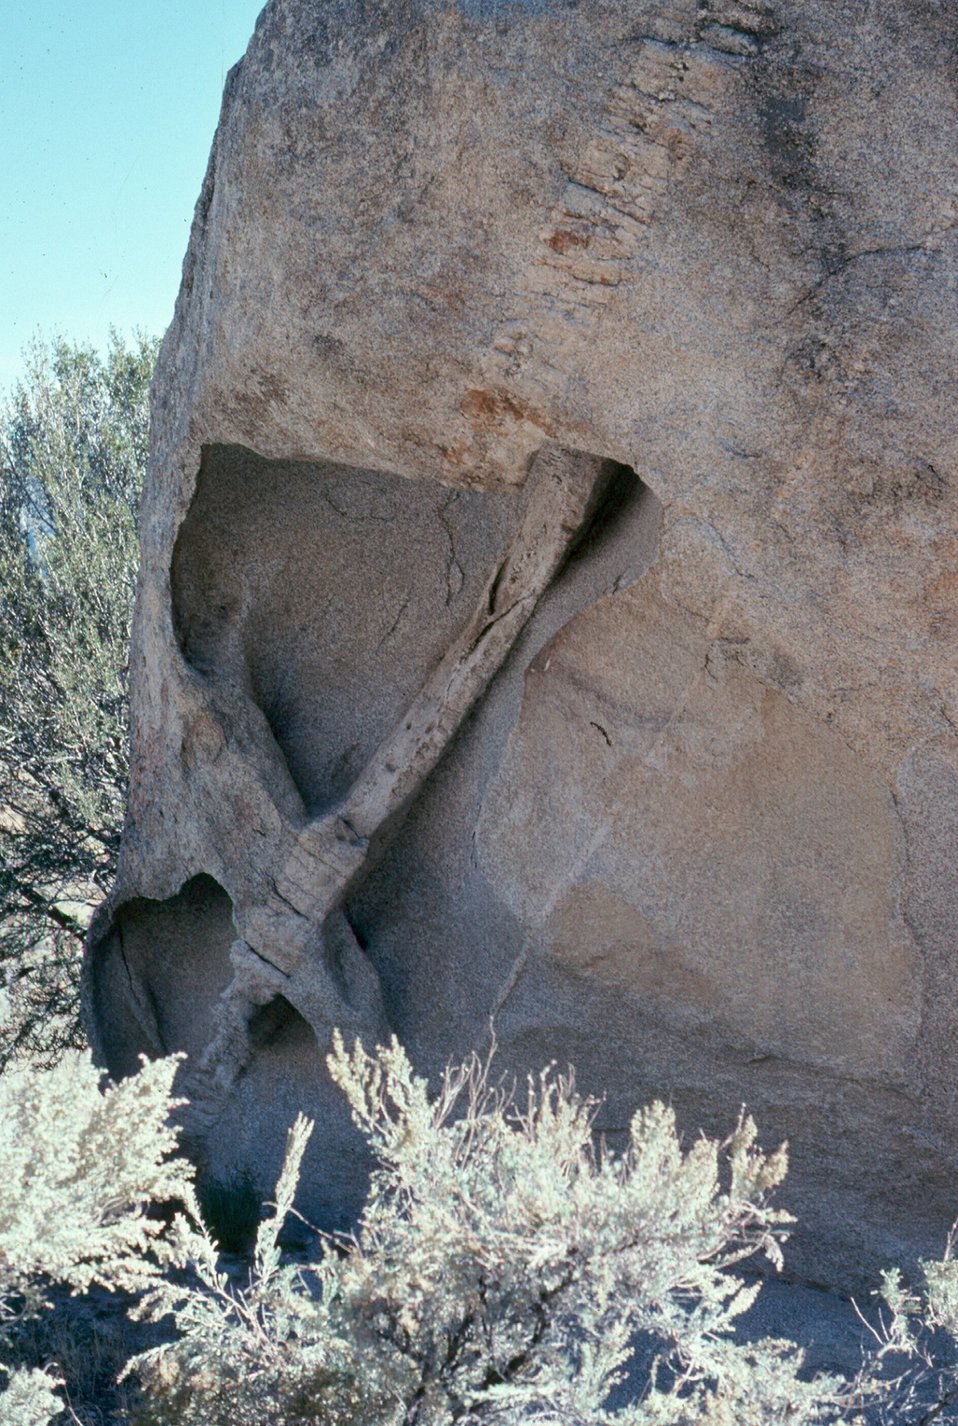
Dike in growth weathering Burley Field Office USRD Upper Snake River District